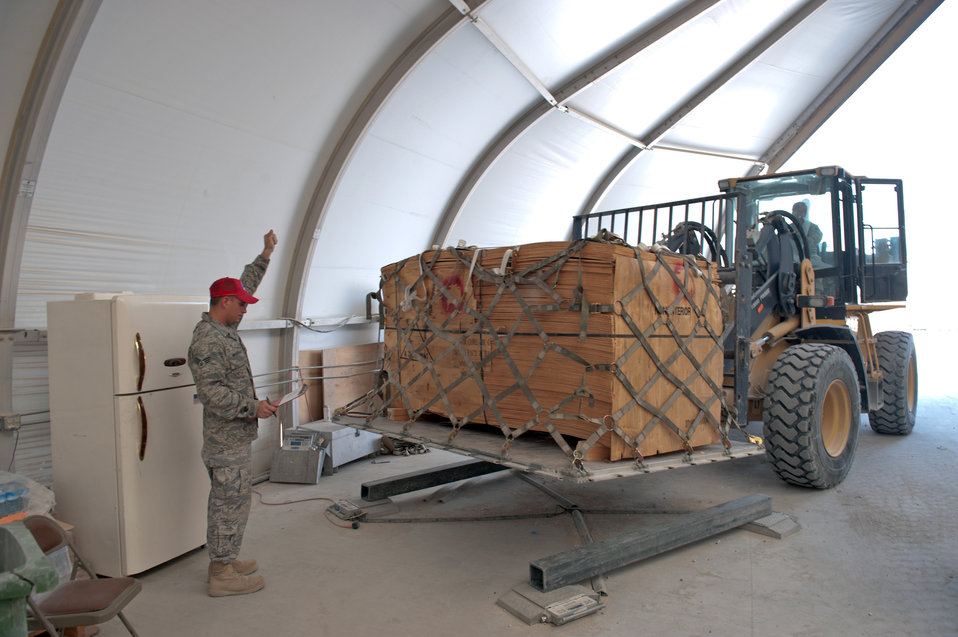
Airmen build bare bases 1 pallet at a time

Senior Airman Ryan McGraw guides a pallet of wood onto weight scales in order to have it shipped Sept. 15, 2009, at an air base in Southwest Asia. Airman McGraw is a 1st Red Horse Group structural journeyman. He along with fellow members of the logistics and pallet build-up team, support all Red Horse operations downrange by obtaining and shipping required equipment. Airman McGraw is deployed from Dyess Air Force Base, Texas.